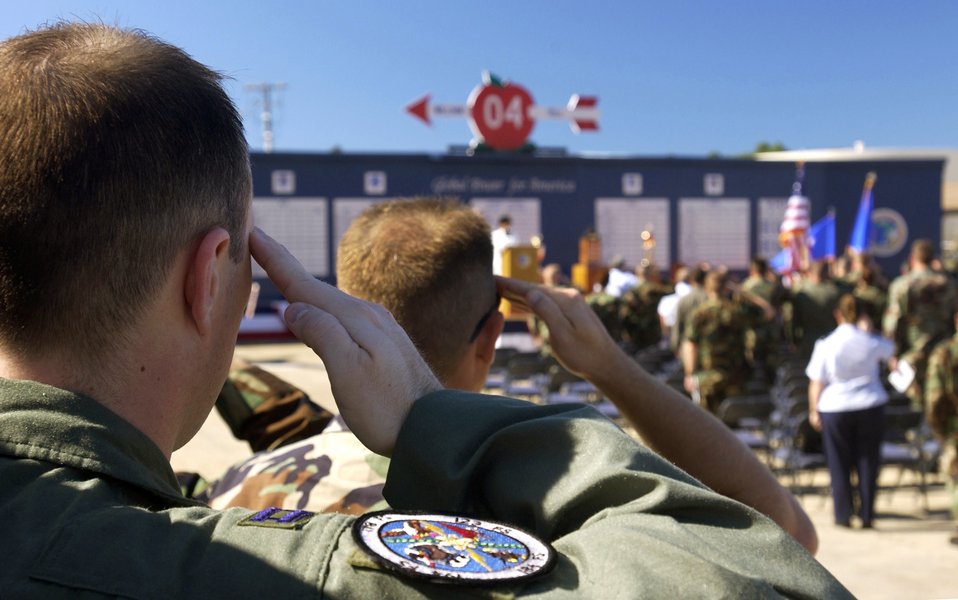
50th anniversary of William Tell kicks off at Tyndall

TYNDALL AIR FORCE BASE, Fla. -- Capt. Chris Jarrett salutes during the opening ceremony of William Tell 2004. This is the 50th anniversary of the competition that tests an aircrew's ability to perform under combat conditions. Two weeks of competition will challenge pilots, weapons loaders and maintainers from five F-15 Eagle fighter squadrons. Captain Harrett is a weapons director from the Oregon Air National Guard's 123rd Fighter Squadron at Portland.